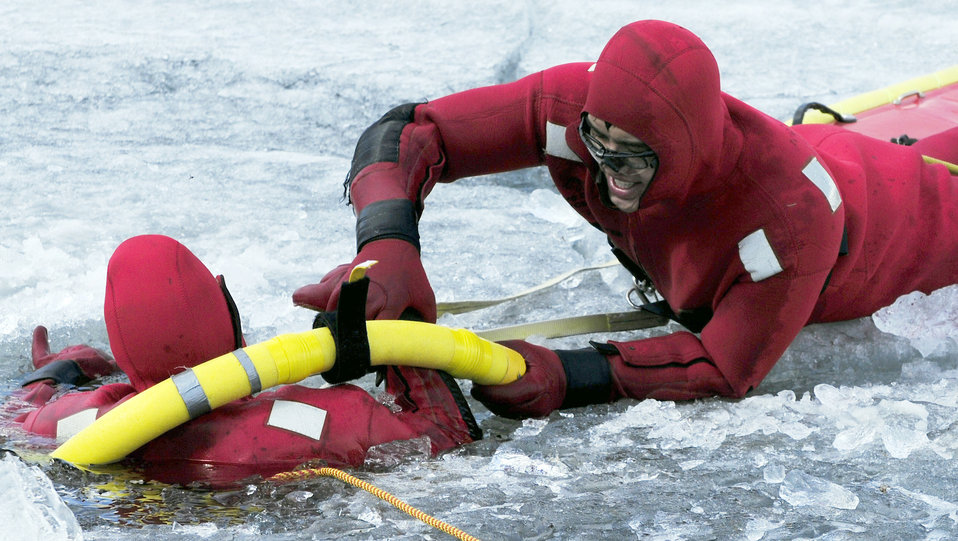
Firefighters train in icy lake

Senior Airman Bao Hoang pulls Airman 1st Class David Piasecki out of a frozen lake during icy water rescue training May 6, 2011, at Eielson Air Force Base, Alaska. Airmen Hoang and Piasecki are fire fighters assigned to the 354th Civil Engineer Squadron Fire Protection Flight.